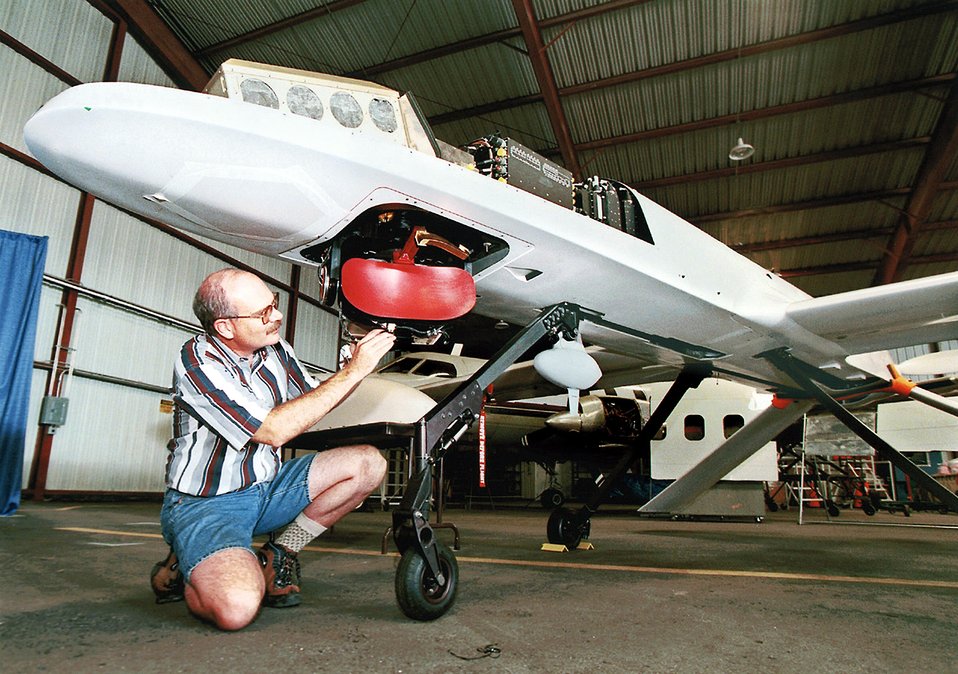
SANDIA RESEARCHER CHECKING LYNX SYNTHETIC-APERTURE RADAR (SAR) ON A GENERAL ATOMICS UNMANNED AERIAL VEHICLE.

LYNX, A FINE-RESOLUTION, REAL-TIME, SYNTHETIC-APERTURE RADAR (SAR) SYSTEM SEEN ATTACHED TO A 42-FOOT-WINGSPAN UNMANNED SURVEILLANCE PLANE. DESIGNED TO BE MOUNTED ON BOTH MANNED AND UNMANNED AIRCRAFT, THE SAR IS A SOPHISTICATED ALL-WEATHER SENSOR CAPABLE OF PROVIDING PHOTOGRAPHIC-LIKE IMAGES THROUGH CLOUDS, IN RAIN OR FOG, DAY OR NIGHT, ALL IN REAL TIME.